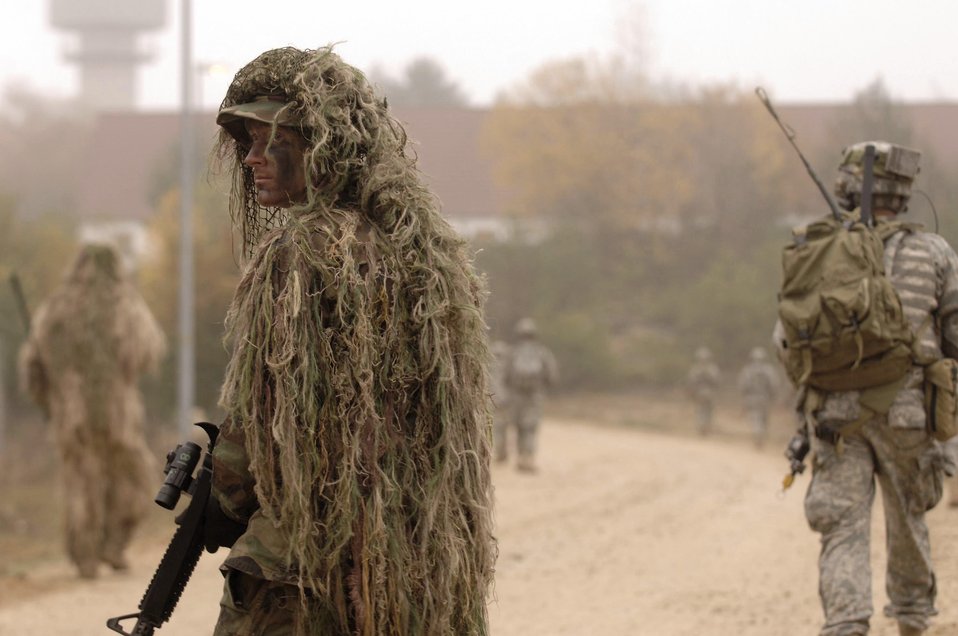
Where's my haystack?

Specialist Alex Simpson, a U.S. Army sniper, provides rear cover for U.S. Air Force joint terminal air controllers during an exercise at Hohenfels Army Garrison, Germany. Specialist Simpson and fellow soldiers provided realism for the week-long exercise.